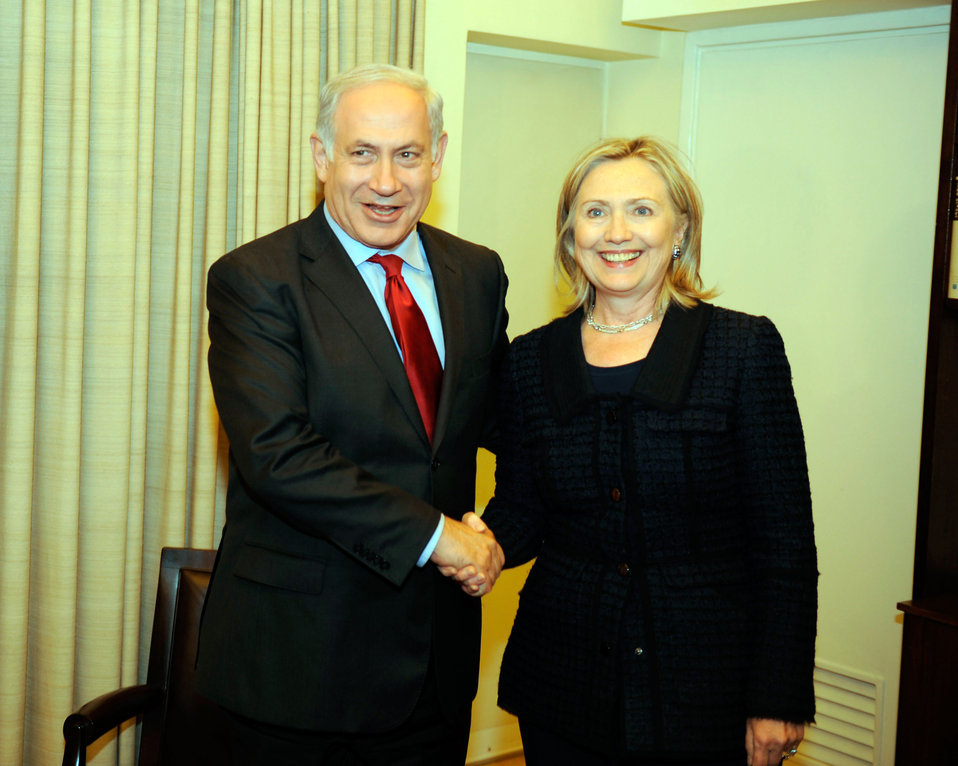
Secretary Clinton Is Greeted By Israeli President Netanyahu

U.S. Secretary of State Hillary Rodham Clinton is greeted by Israeli Prime Minister Benjamin Netanyhahu at the Prime Minister's Residence in Jerusalem on September 15, 2010.